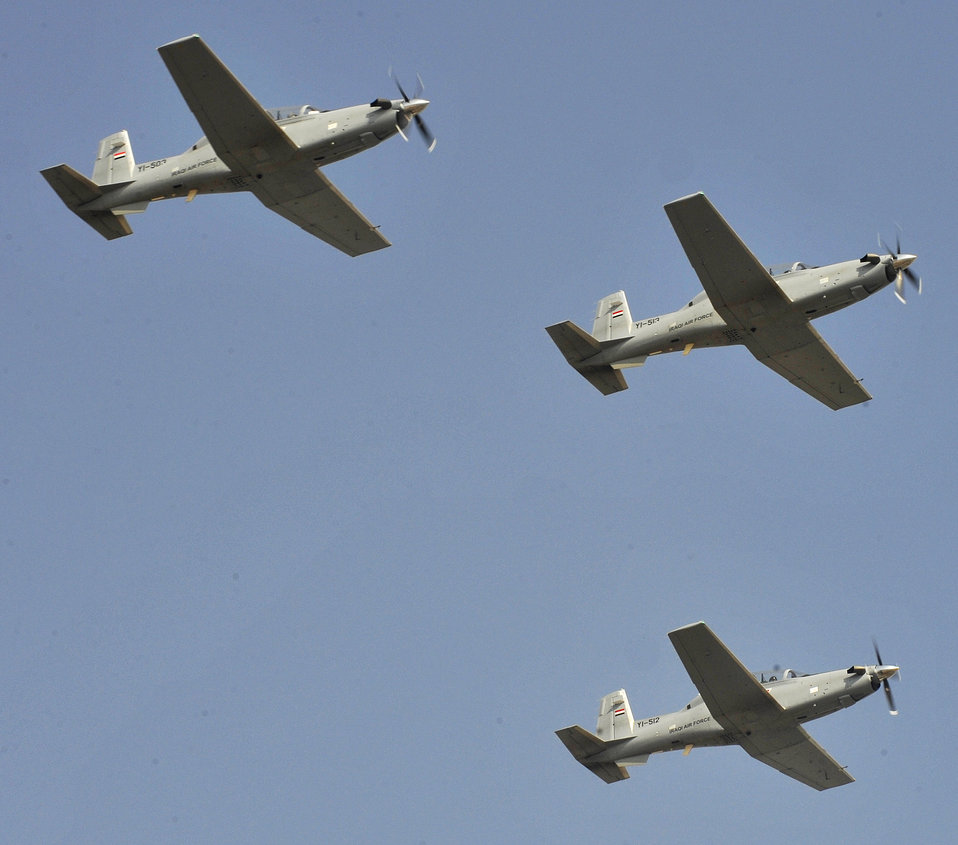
Iraqi airmen fly record number of aircraft

Three T-6A Texan IIs fly over formations of Iraqi Army soldiers Jan. 6, 2011, during the annual Army Day Parade, marking the 90th anniversary of Iraq ground forces at the International Zone in Baghdad, Iraq. This year marked the largest participation by the Iraqi air force. In all, 20 aircraft and eight airframes performed fly-bys for reviewing officials.